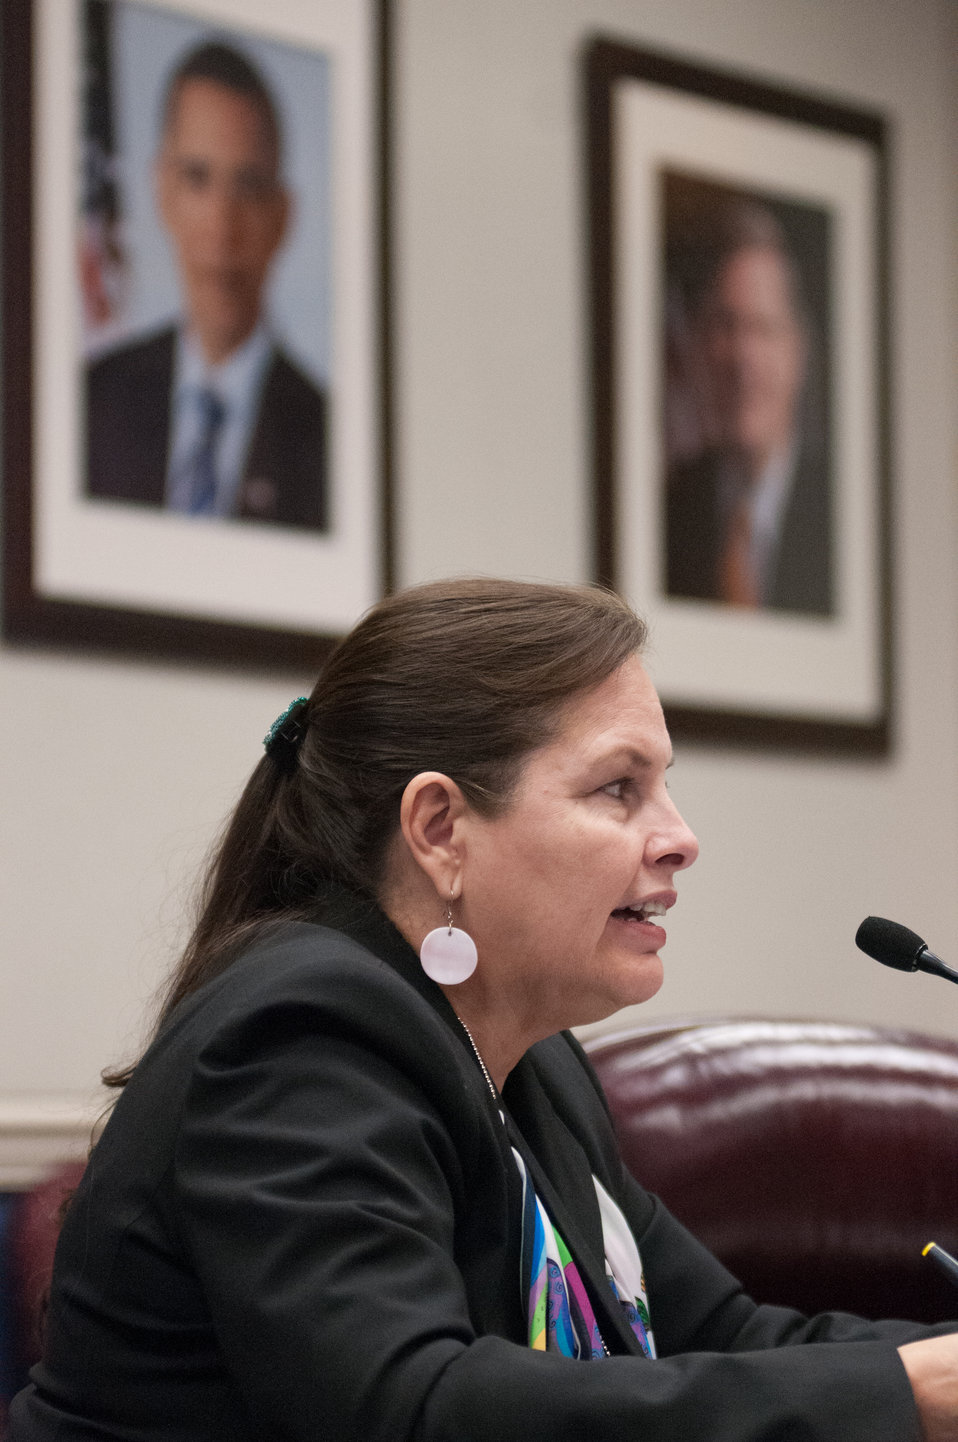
Cankdeska Cikana Community College President Cynthia Lindquist, Fort Totten, North Dakota, presents some of her college's needs to U.S. Department of Agriculture Senior Advisor to the Secretary on Tribal Relations and Office of Tribal Relations Acting Director Max Finberg, during the USDA and American Indian Higher Education Consortium Leadership Group Winter Meeting, at the USDA Whitten Building, Williamsburg Room, in Washington D.C., on Friday, Feb. 8, 2013.